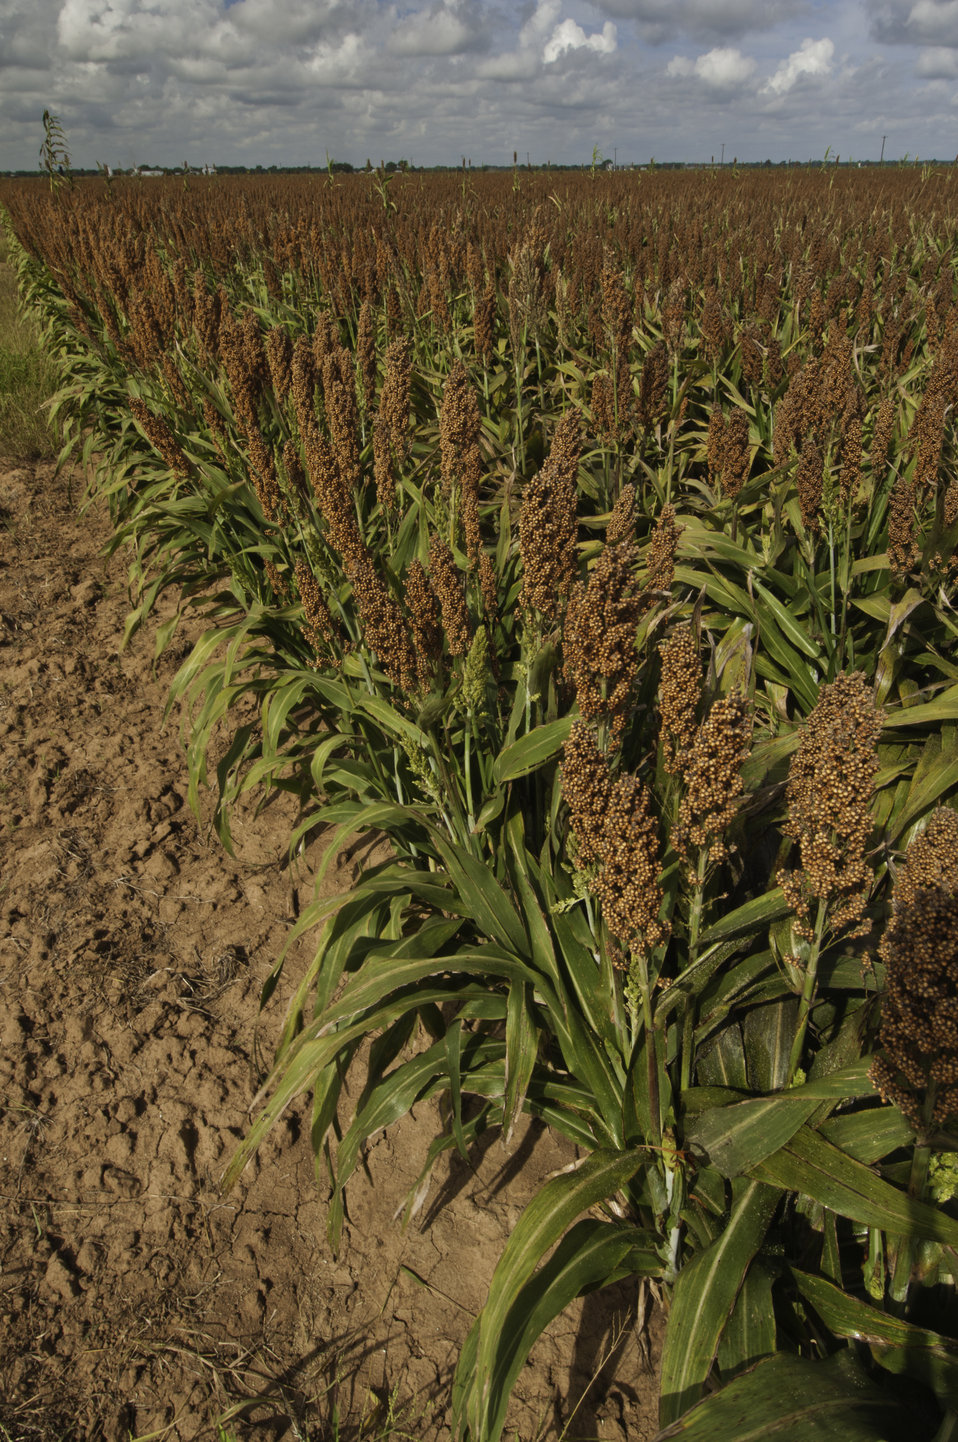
Grain sorghum grows on the Wilder Farms Navasota, TX on Aug. 23, 2013. The ground shows signs of the Texas drought but the crop shows no ill affects from the drought USDA photo by Bob Nichols.